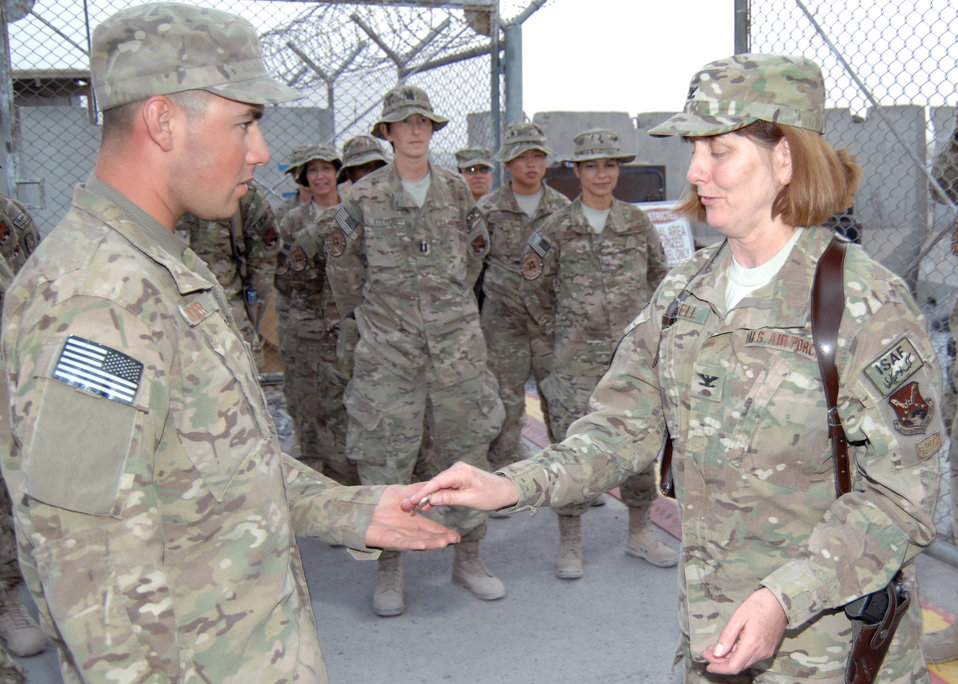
Raise the Flag

Airman 1st Class Allen Holder, receives a coin from Col. Elizabeth Harrell. Holder volunteered his time and brought over an auger drill to help make way for the new flagpole. Holder is with the 451st Expeditionary Civil Engineer Squadron and deployed from Nellis Air Force Base, Nev., and Harrell 651st Expeditionary Aeromedical Evacuation Squadron commander and deployed from Scott AFB, Ill.